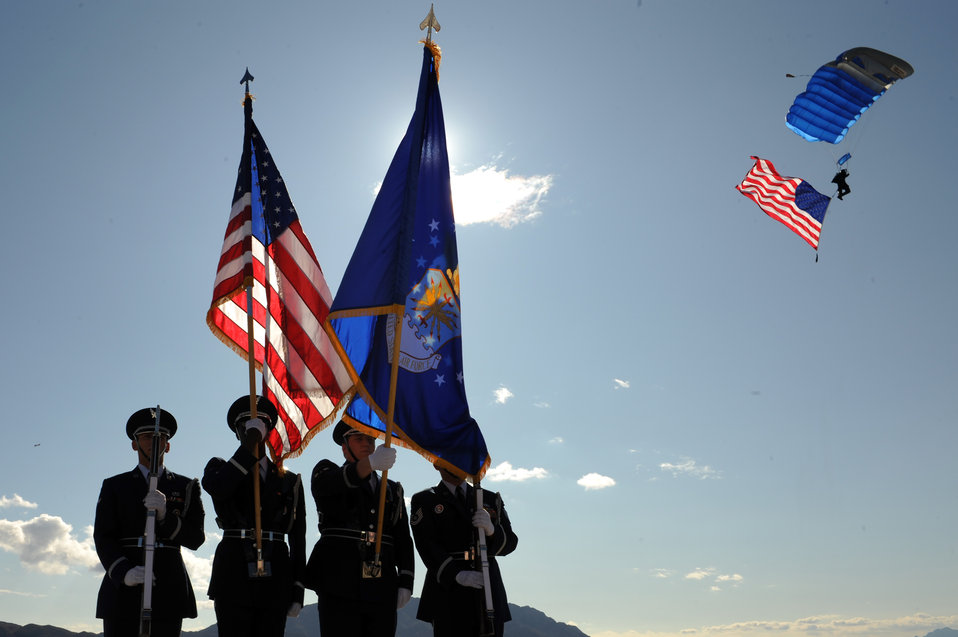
Thunderbirds close air show season

The base Honor Guard presents the colors while a member of the U.S. Air Force Academy Parachute Team displays the American flag Nov. 13, 2009, during the opening ceremony of the 2009 Aviation Nation at Nellis Air Force Base, Nev. The open house is an opportunity for the Las Vegas community to view aerial demonstrations and static displays of various aircraft from the military.